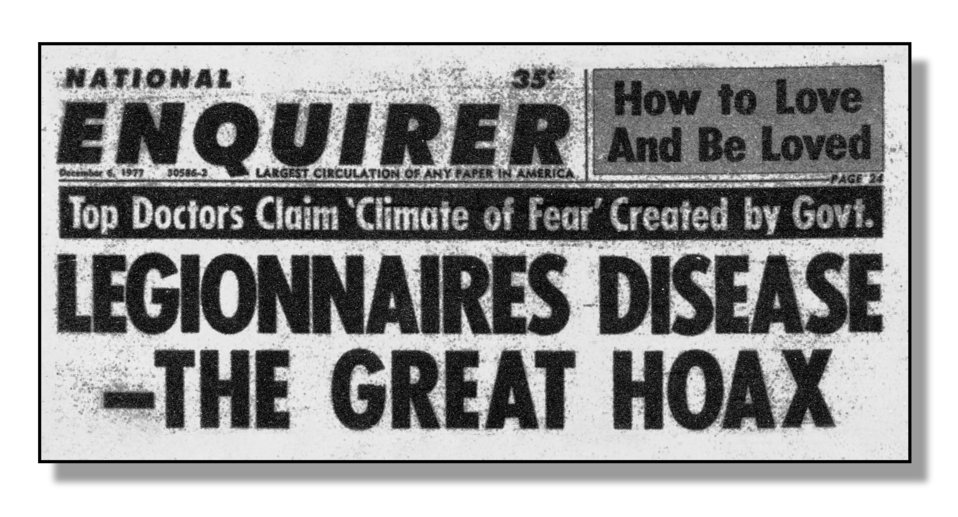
Legionnaires' Disease newspaper headline during the outbreak of the 1970s.